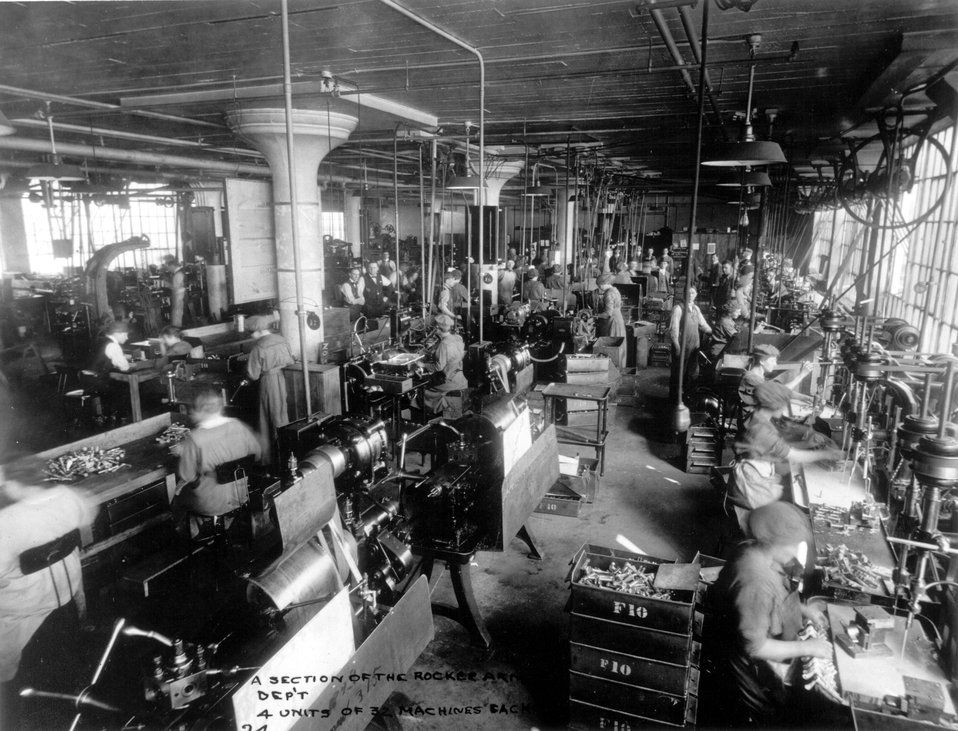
A section of the Rocker Arm Dept, making parts for autos during WWI.